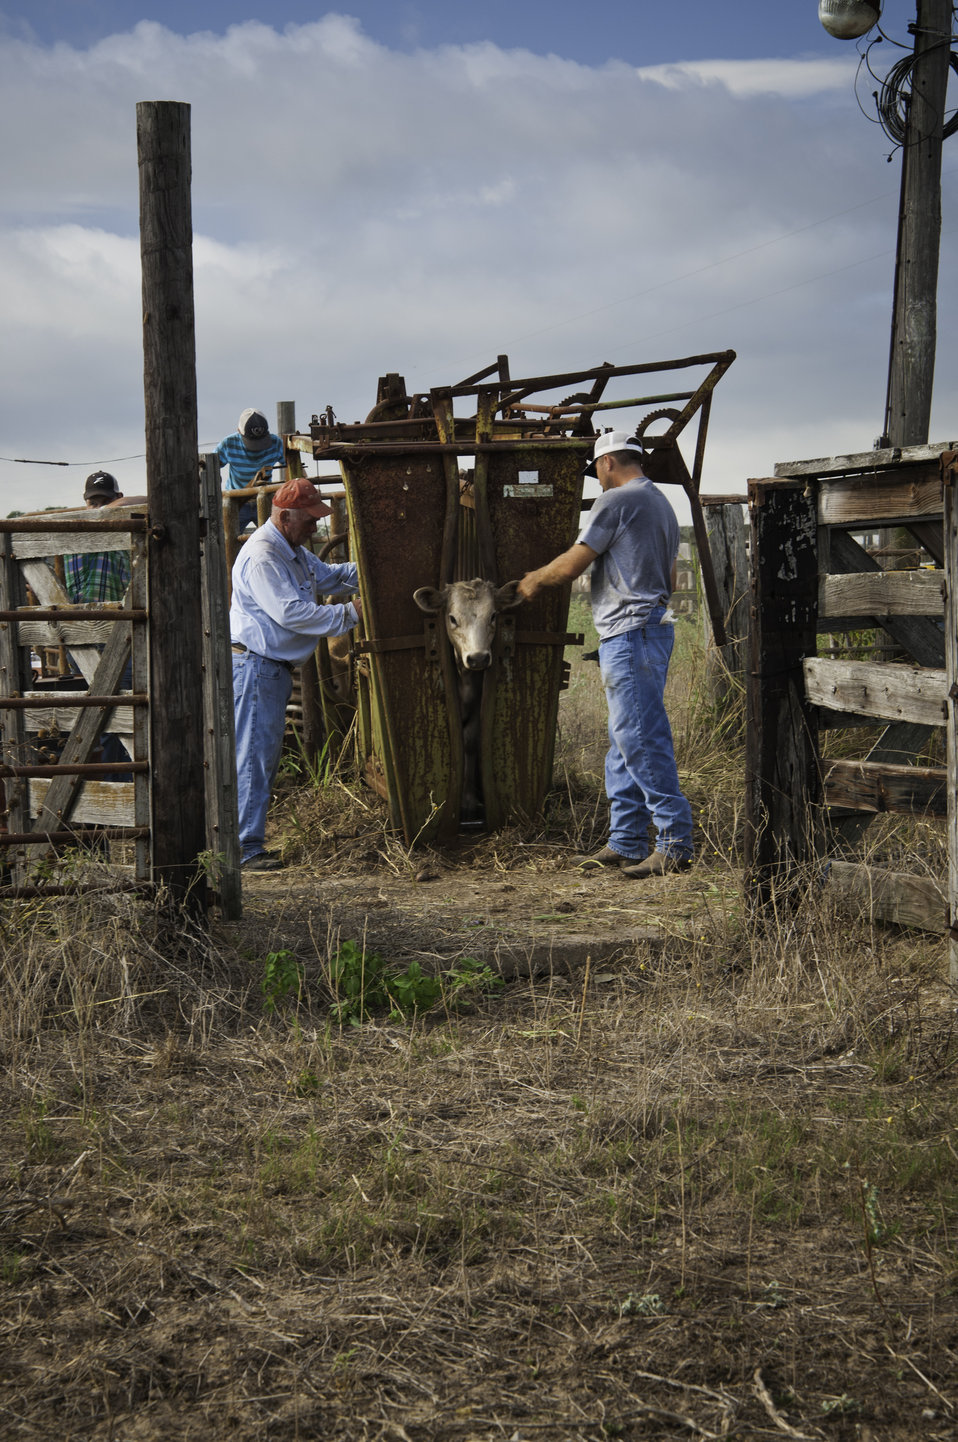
Cattle are prepared for immunization on a Texas farm on Aug. 21, 2013.